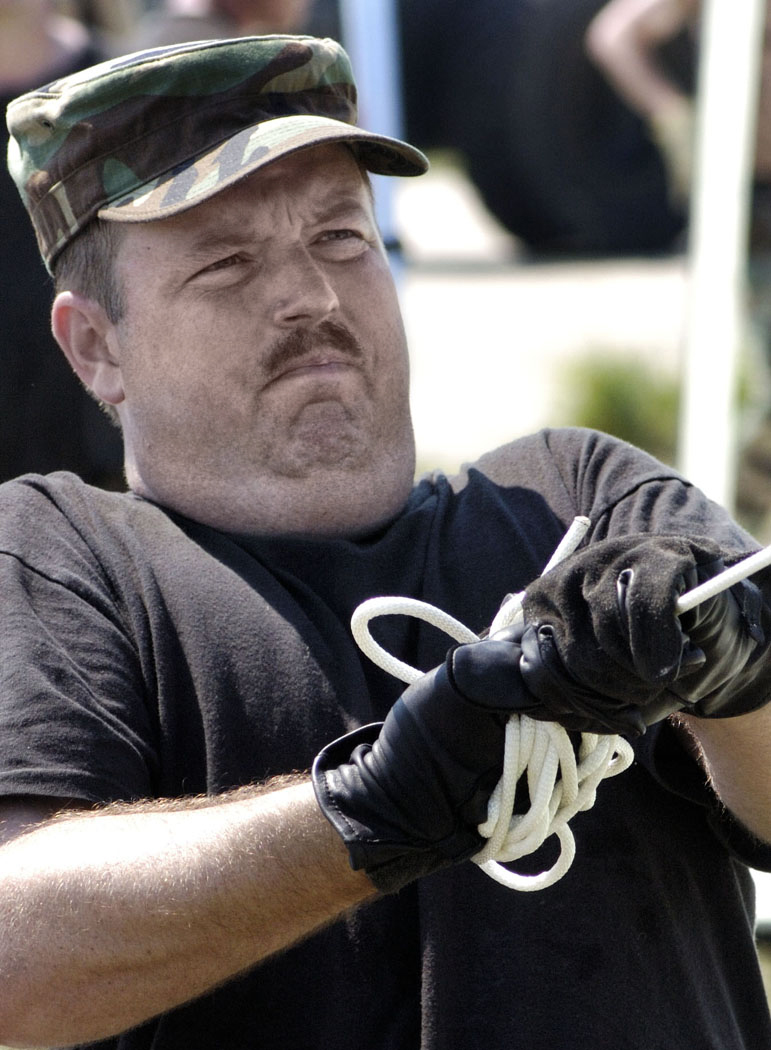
tent city

NEW ORLEANS -- Senior Master Sgt. John Tucker helps erect tents at Louis Armstrong International Airport here Sept. 4. The tents were flown in from the 49th Materiel Maintenance Group at Holloman Air Force Base, N.M., to house workers supporting the Hurricane Katrina relief effort. Sergeant Tucker is a logistics planner with the 4th Logistics Readiness Squadron, Seymour Johnson Air Force Base, N.C.